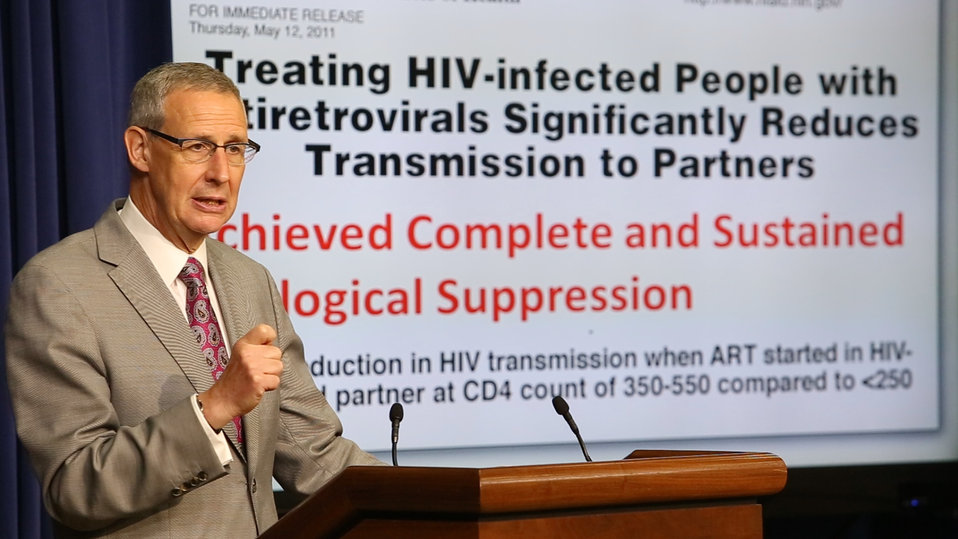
MVI 0180.MOV.Still004